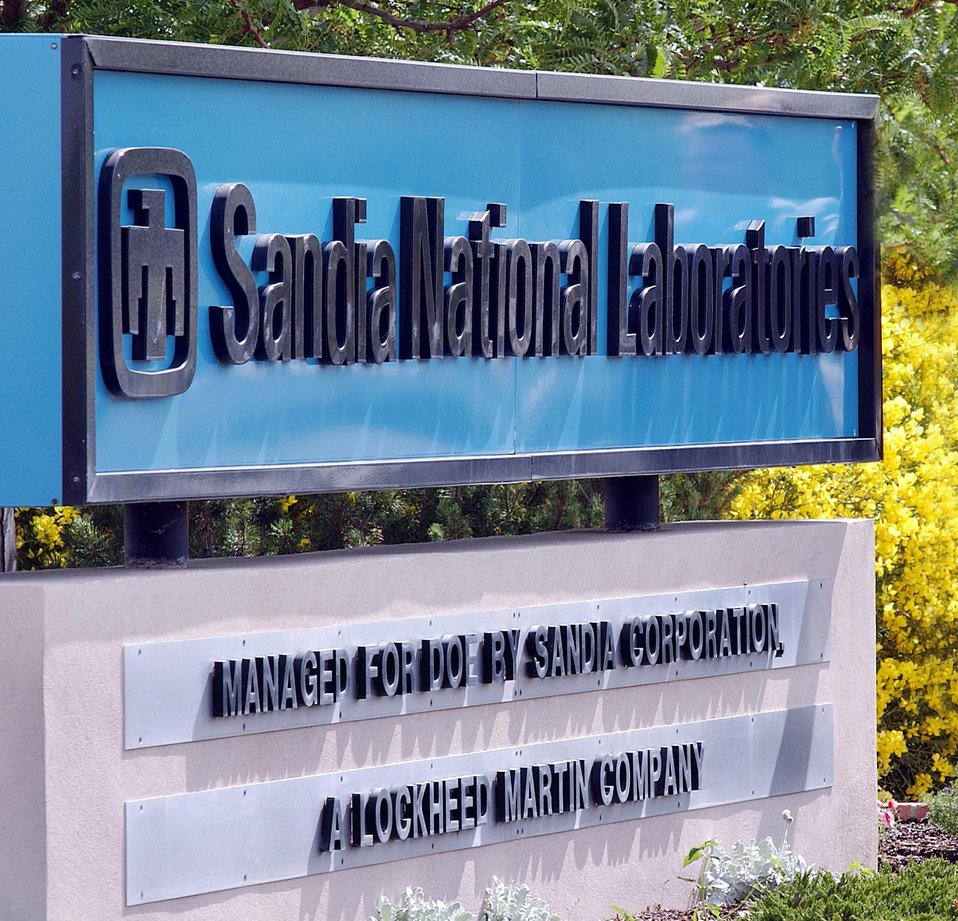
ENTRANCE TO DOE'S SANDIA NATIONAL LABORATORIES, ALBUQUERQUE, NEW MEXICO.
SANDIA NATIONAL LABORATORIES WORKS IN PARTNERSHIP WITH UNIVERSITIES, AND INDUSTRY TO ENHANCE THE SECURITY, PROSPERITY, AND WELL BEING OF THE NATION. SANDIA IS A NATIONAL SECURITY LABORATORY THAT DESIGNS NON-NUCLEAR COMPONENTS FOR THE NATION'S NUCLEAR WEAPONS, AS WELL AS PERFORMING A WIDE VARIETY OF ENERGY RESEARCH AND DEVELOPMENT PROJECTS, AND ASSIGNMENTS RESPONDING TO NATIONAL SECURITY THREATS, BOTH MILITARY AND ECONOMIC.